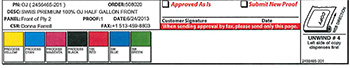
RECALLED – Orange Juice

March 3, 2014 – Product Recall – Lehigh Valley Dairy Conducts Voluntary Recall of Lehigh Valley, Swiss Premium, and Price Chopper Brand Orange Juice Because It May Contain Undeclared Allergen (Milk).